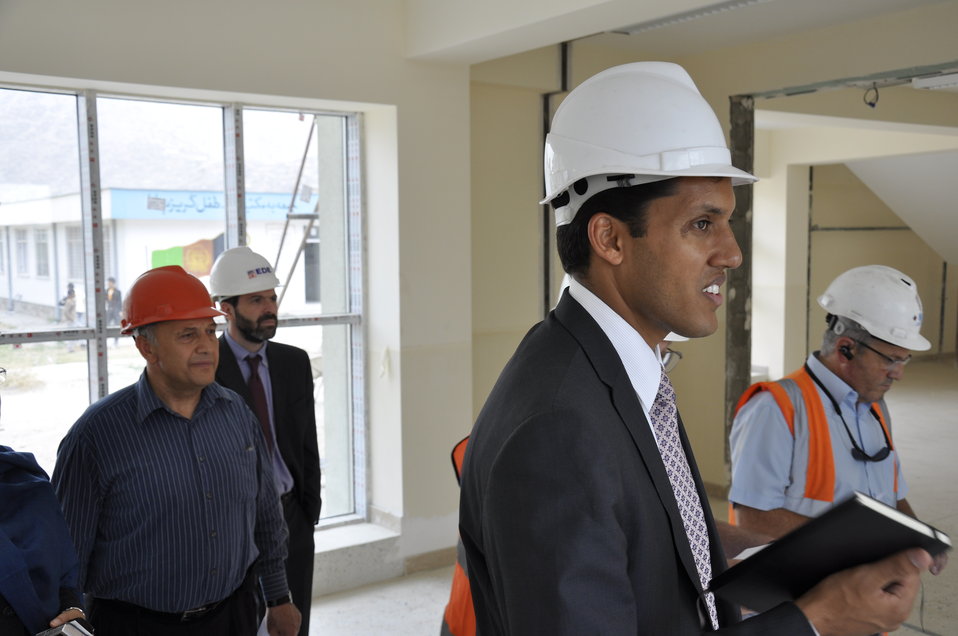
Ghazni High School in Kabul